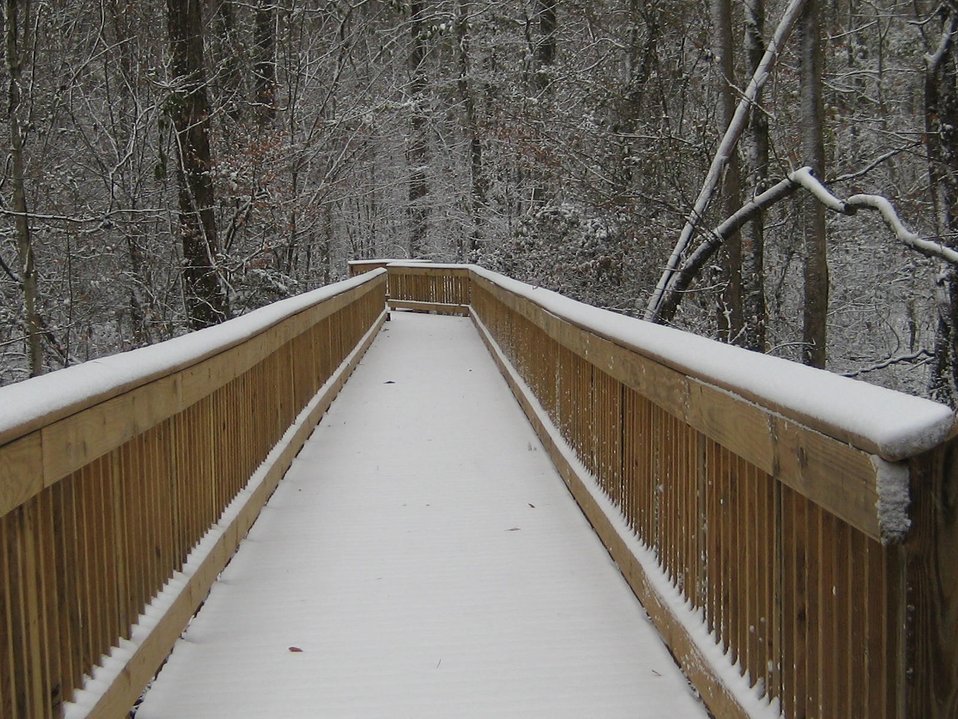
Washington Ditch Boardwalk

Great Dismal Swamp National Wildlife Refuge, VA.